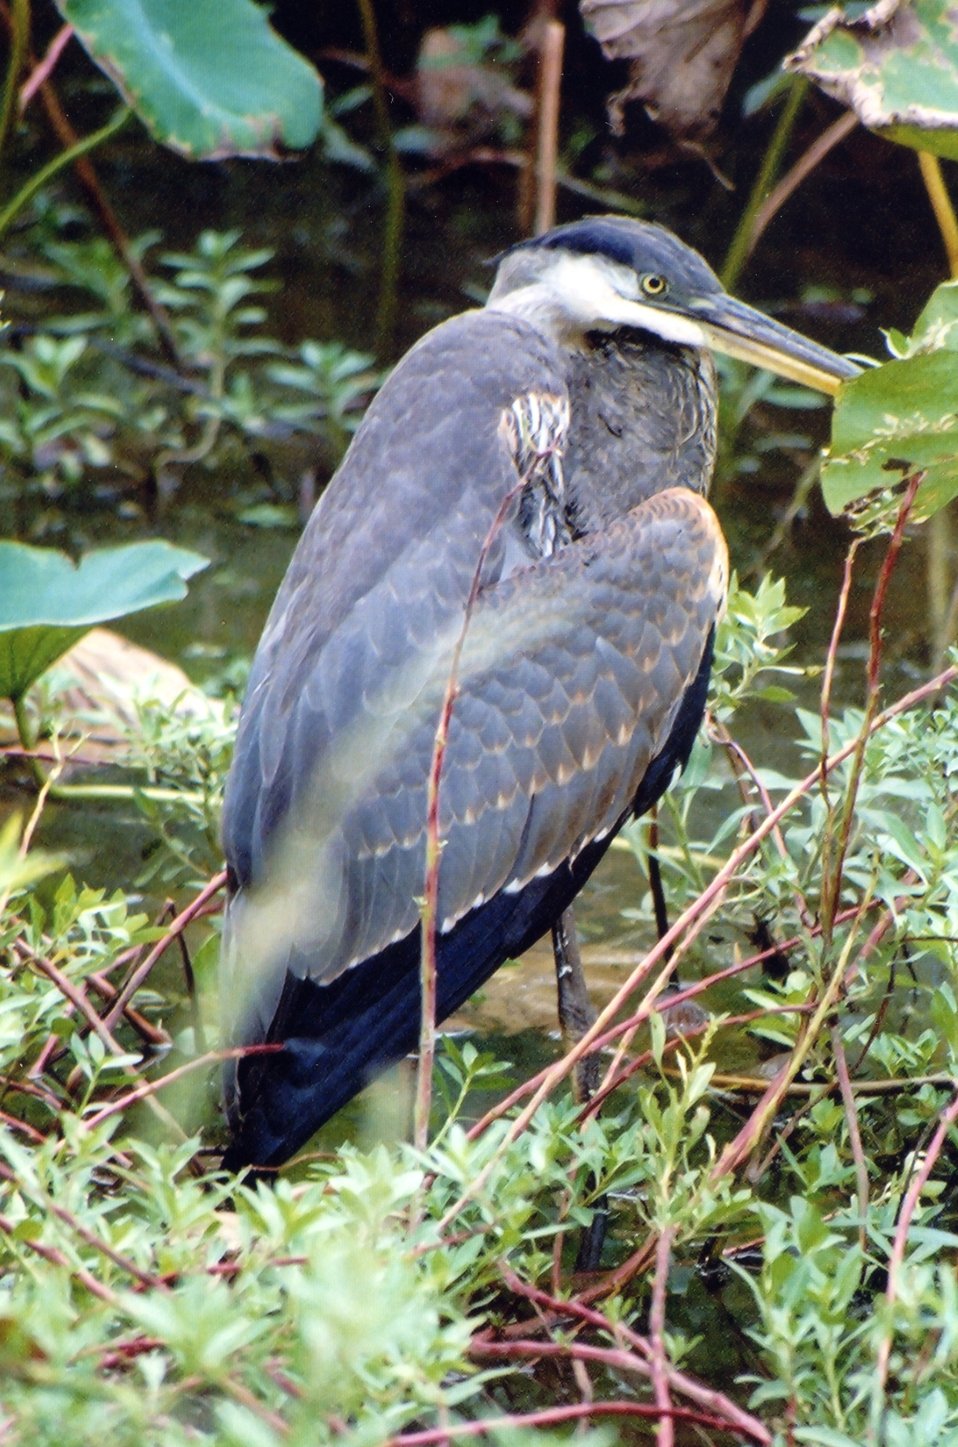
Juvenile great blue heron (?) sitting in a roadside marsh.